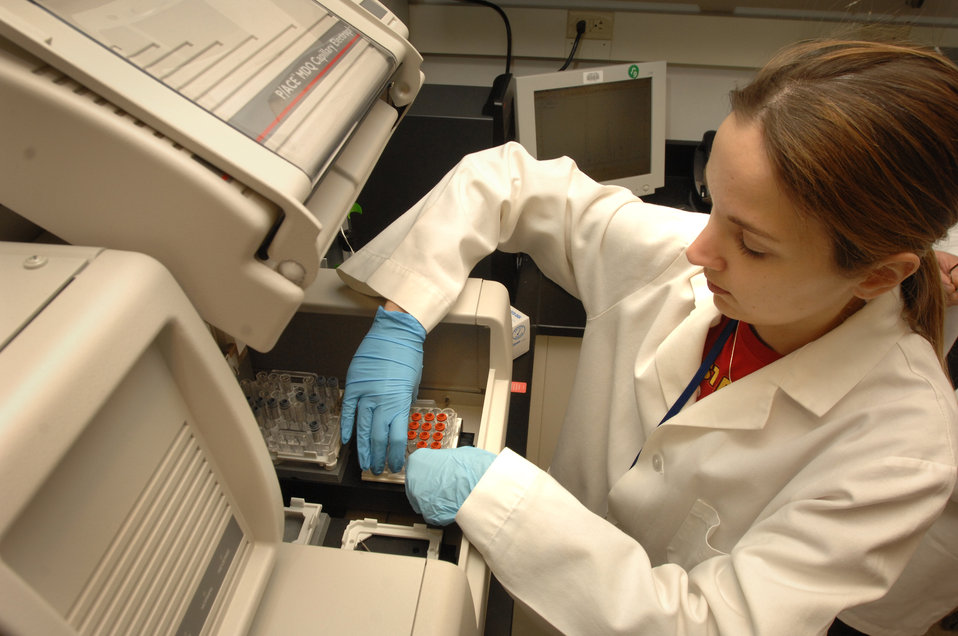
IRP Lab Researcher

Kristin Schultz, Ph.D. (IRTA Post-Doc, Integrative Neuroscience Section/ Integrative Neuroscience Branch) is shown preparing samples for analysis from the brain of a rat self-administering cocaine.